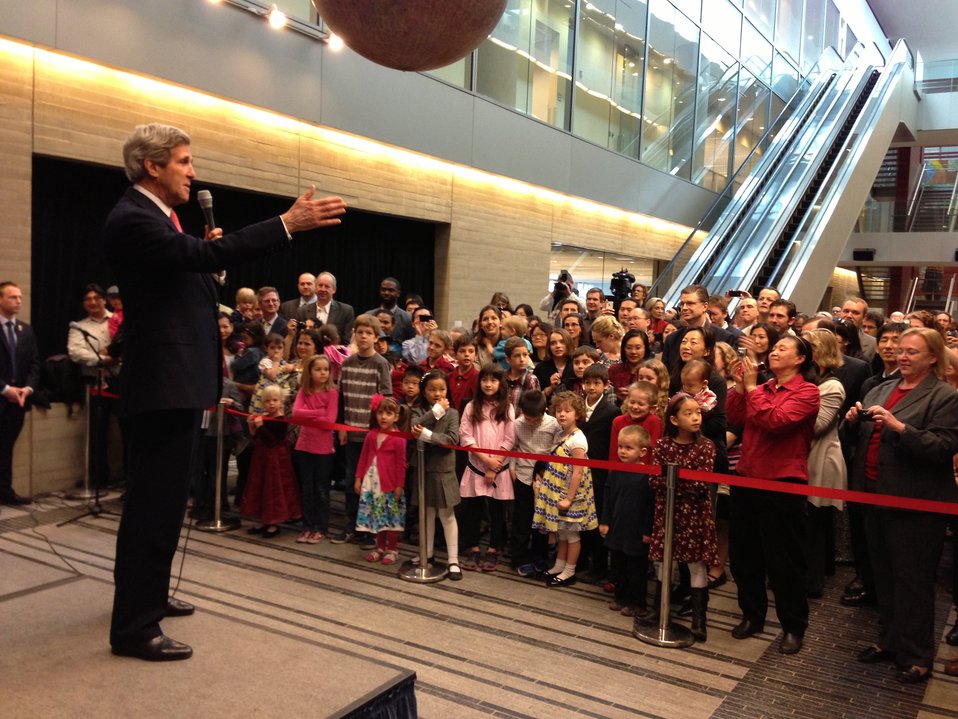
Secretary Kerry Addresses Staff at the U.S. Embassy in Beijing

U.S. Secretary of State John Kerry addresses staff at the U.S. Embassy in Beijing, China, on April 14, 2013.